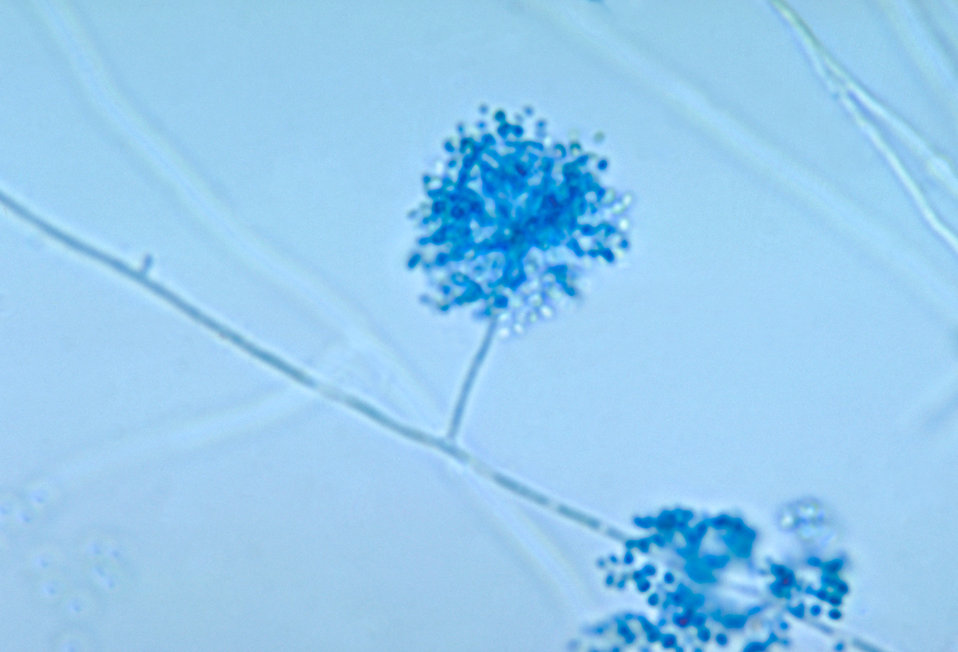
This is a photomicrograph of young conidiophores of a Tritirachium sp. fungus.